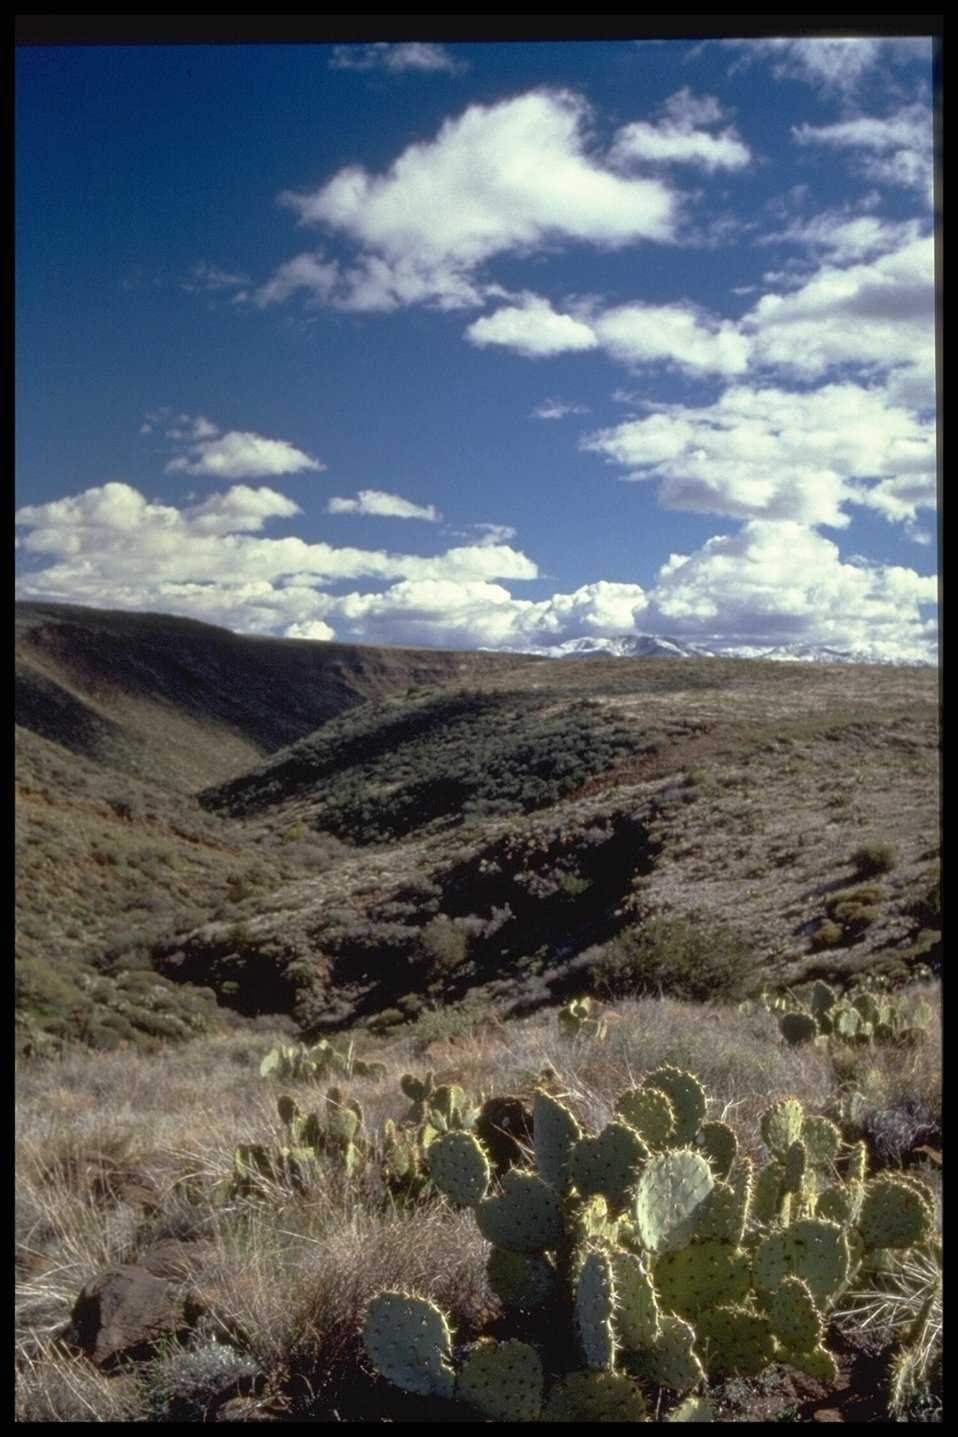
The Agua Fria Canyon below a cloud peppered Arizona sky. Prickly pear cacti border the rim of the canyon.